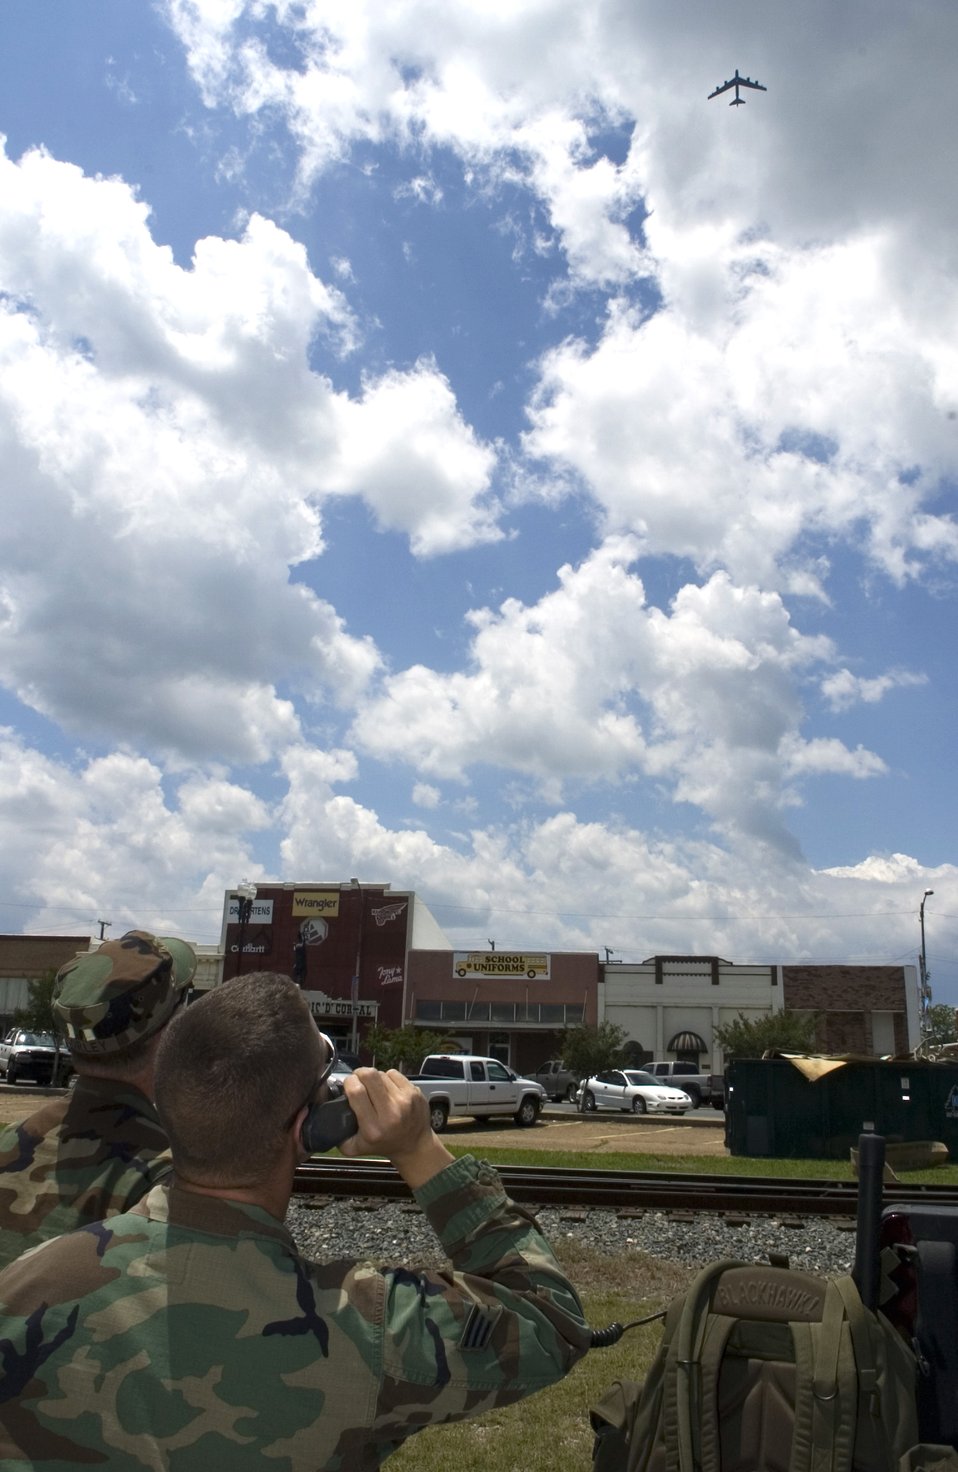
Airmen call in 'air strikes' on Louisiana communities

Senior Airman Chris Kenck, a joint terminal air controller assigned to Detachment 1, 458th Combat Training Squadron, Fort Polk, La., talks the pilot of a B-52 Stratofortress from Barksdale, AFB, La., flying overhead. Airman Kenck is calling in a target during urban combat air support training on May 16, 2006. The training took place in Deridder, La., where the 458th has an agreement to allow flights over the city for more realistic urban conditions.